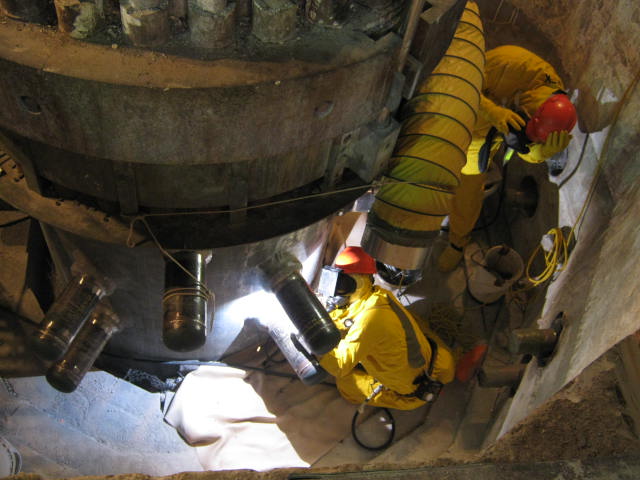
Workers inside of HWCTR

Heavy Water Components Test Reactor on the path to decommissioning